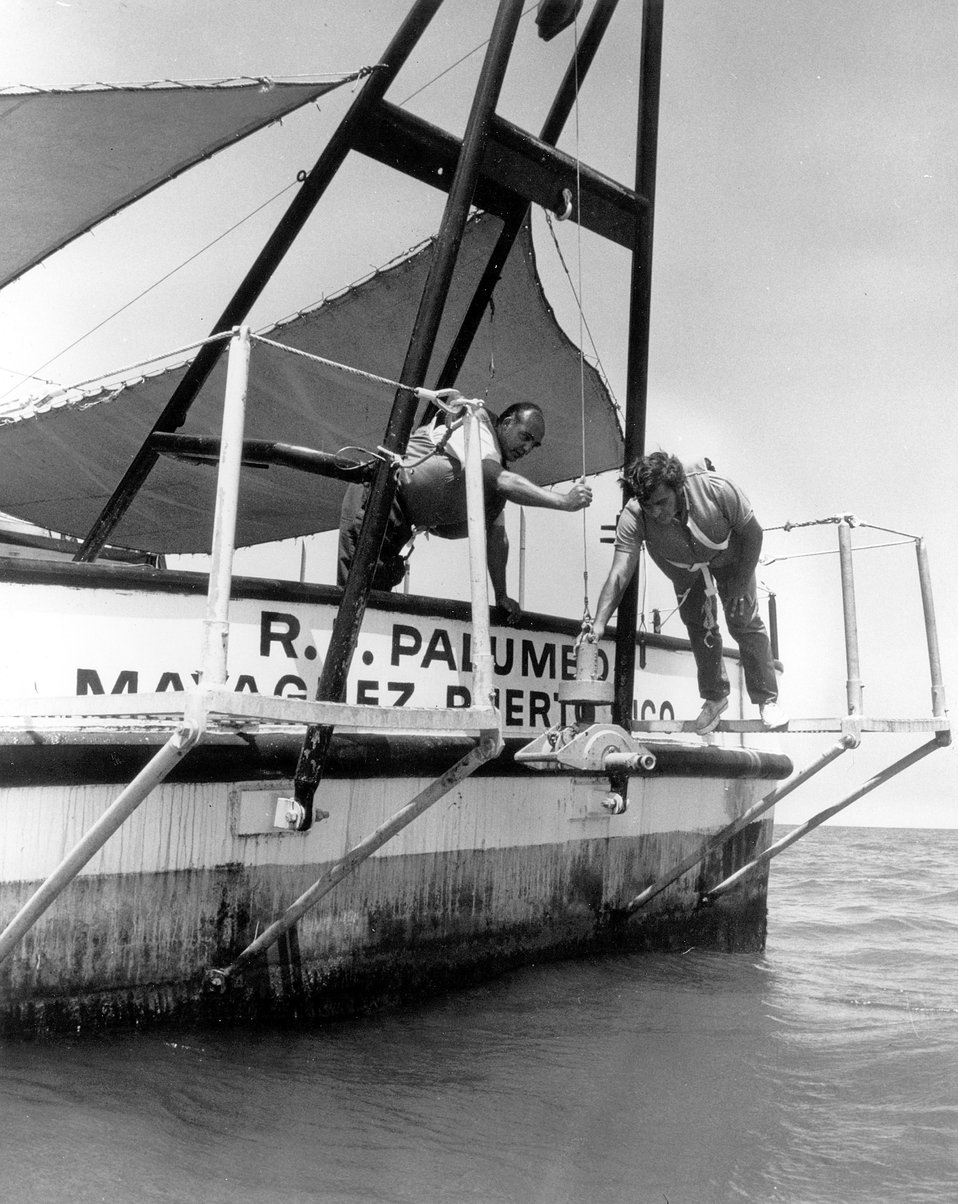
Researchers aboard the R.F. Palumbo, a U.S. Atomic Energy Commission research vessel, take samples from the bottom of the sea in the coastal regions of Puerto Rico. Circa 1972.